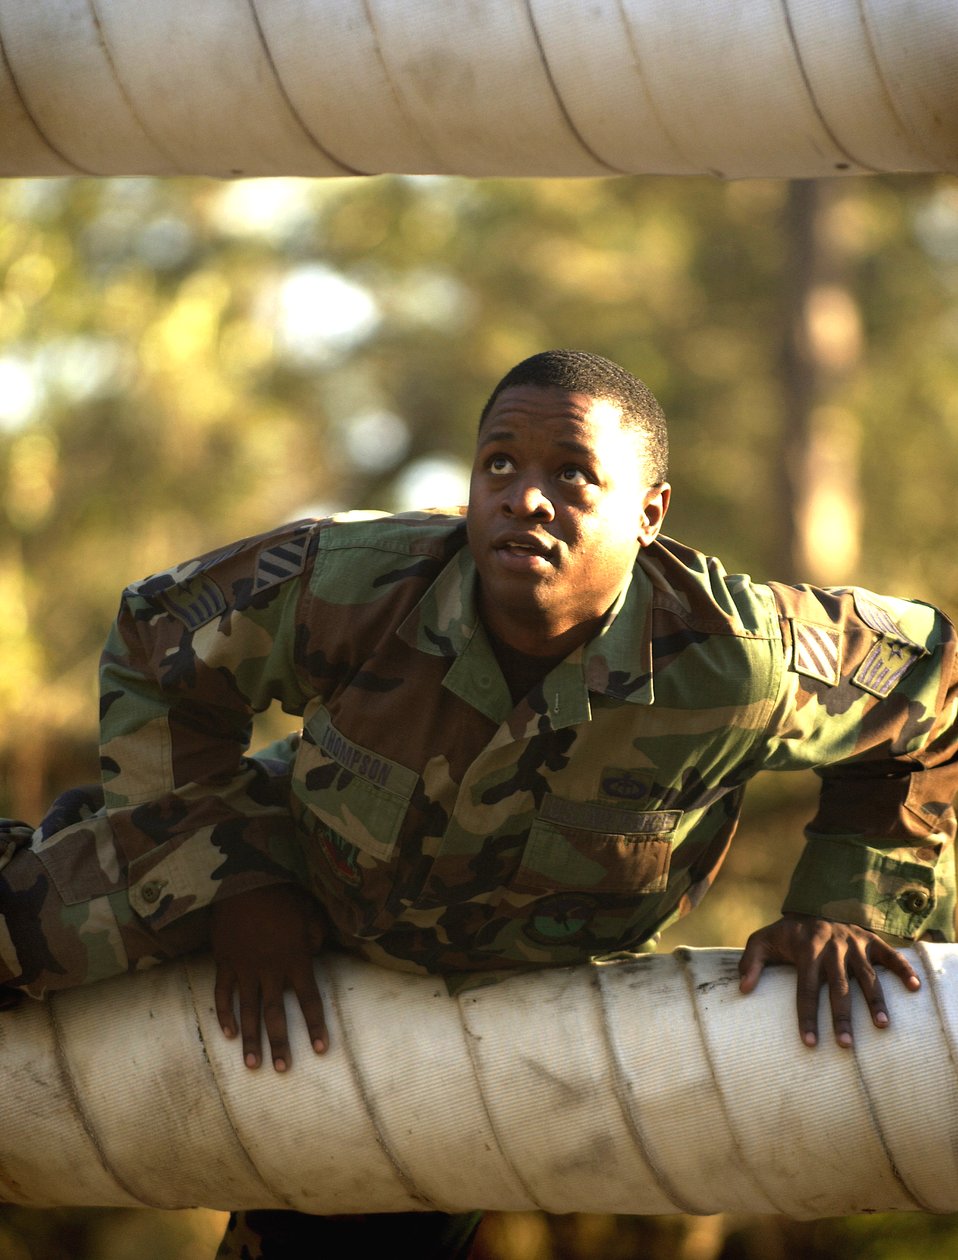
Up and over

AVON PARK, Fla. -- Staff Sgt. Gerry Thompson climbs over an obstacle during Dragon Challenge 04 here Dec. 5. Dragon Challenge is an annual competition where airmen compete for top honor in physical strength, endurance, mental and emotional challenges. Sergeant Thompson is assigned to the 15th Air Support Operations Squadron at Fort Stewart, Ga.